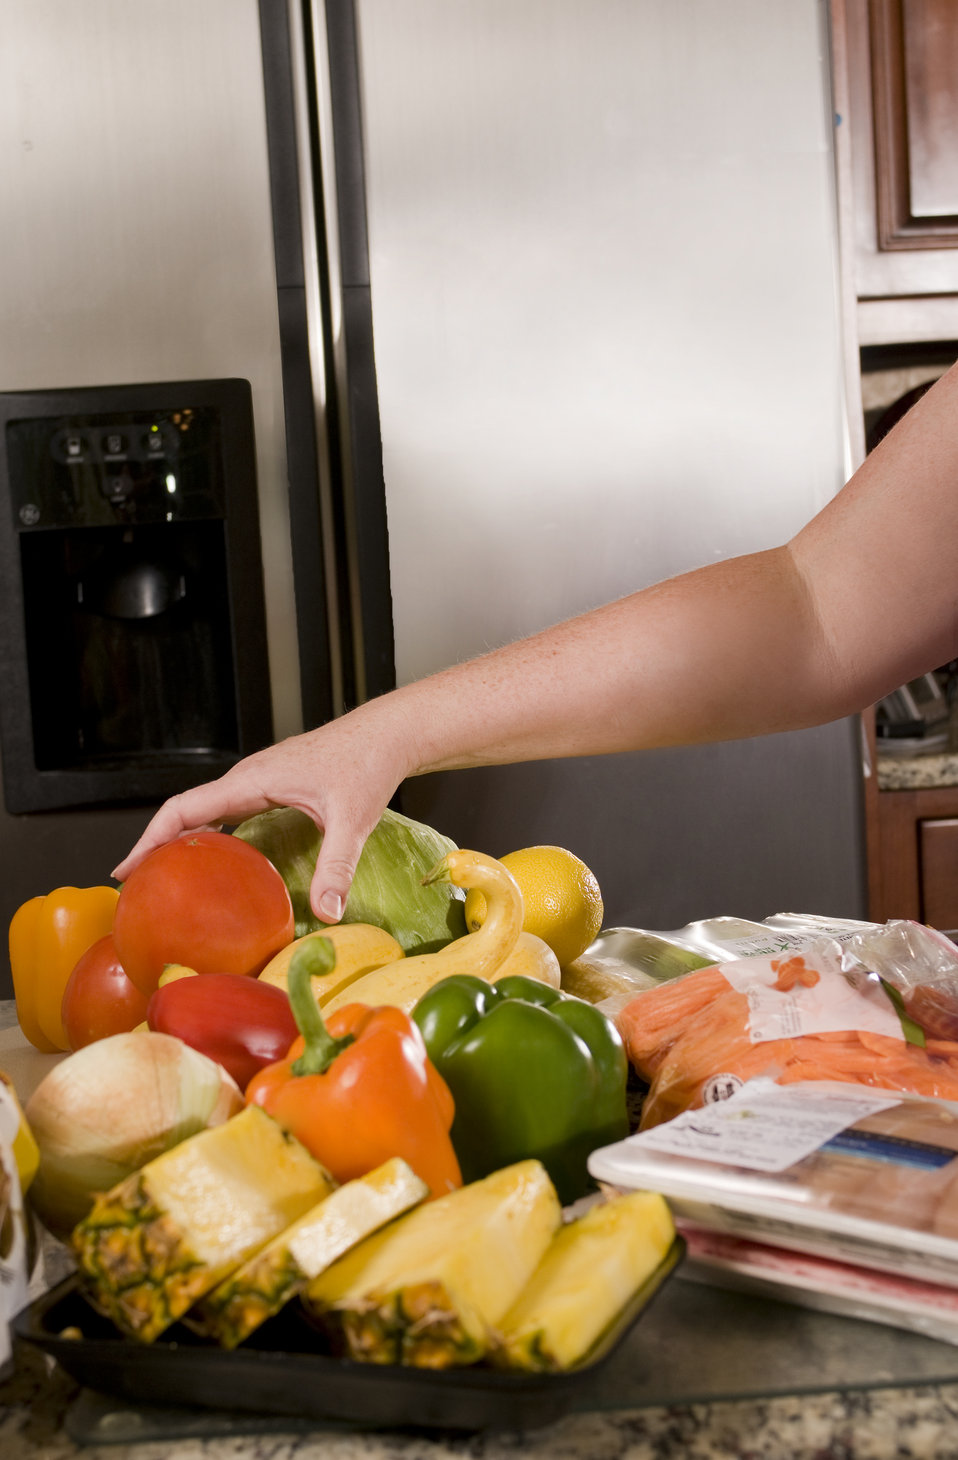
This image depicts a woman's arm reaching for a tomato amongst a cache of newly-purchased groceries atop her sink's countertop, The grocery list includes four bell peppers, i.e., red, yellow, green, orange, a bag of pre-sliced carrots, fresh-sliced pineapple, a sweet onion, a head of iceberg lettuce, a tomato, a yellow squash, a lemon, a package of deboned chicken breasts, and a package of pork cutlets.